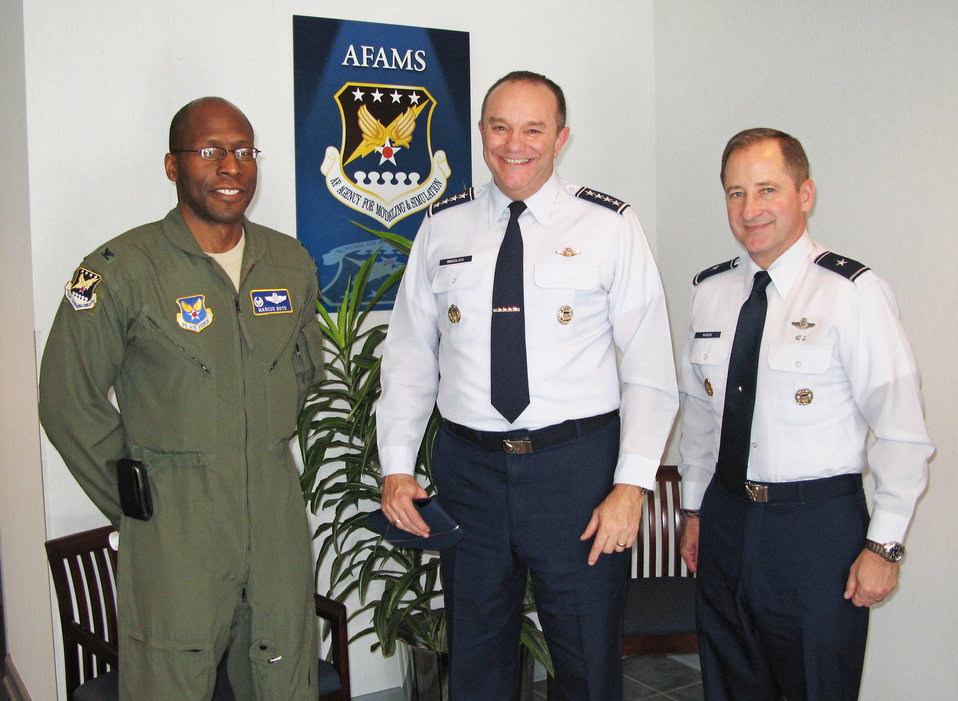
Vice CSAF emphasizes modeling, simulation integration

Col. Marcus Boyd (from left), the commander of the Air Force Agency for Modeling and Simulation, welcomed Gen. Philip Breedlove and Brig. Gen. John R. Ranck Jr. to the AFAMS office Feb. 18, 2011, in Orlando, Fla. General Breedlove is the vice chief of staff of the Air Force, and General Ranck is the director of warfighter systems integration in the Office of Information Dominance and the chief information officer in the Office of the Secretary of the Air Force.